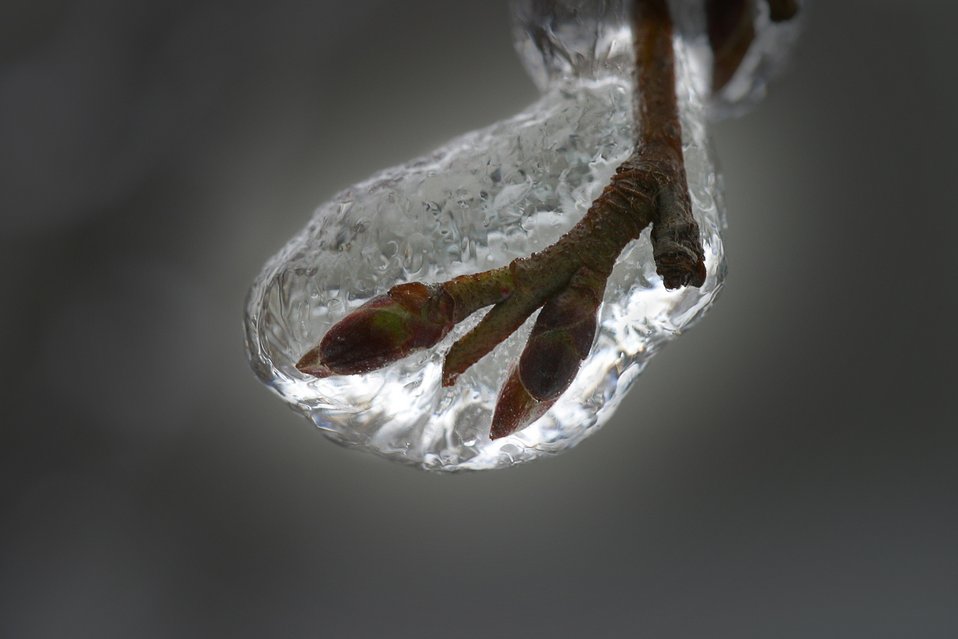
Ice on Service Berry branch.